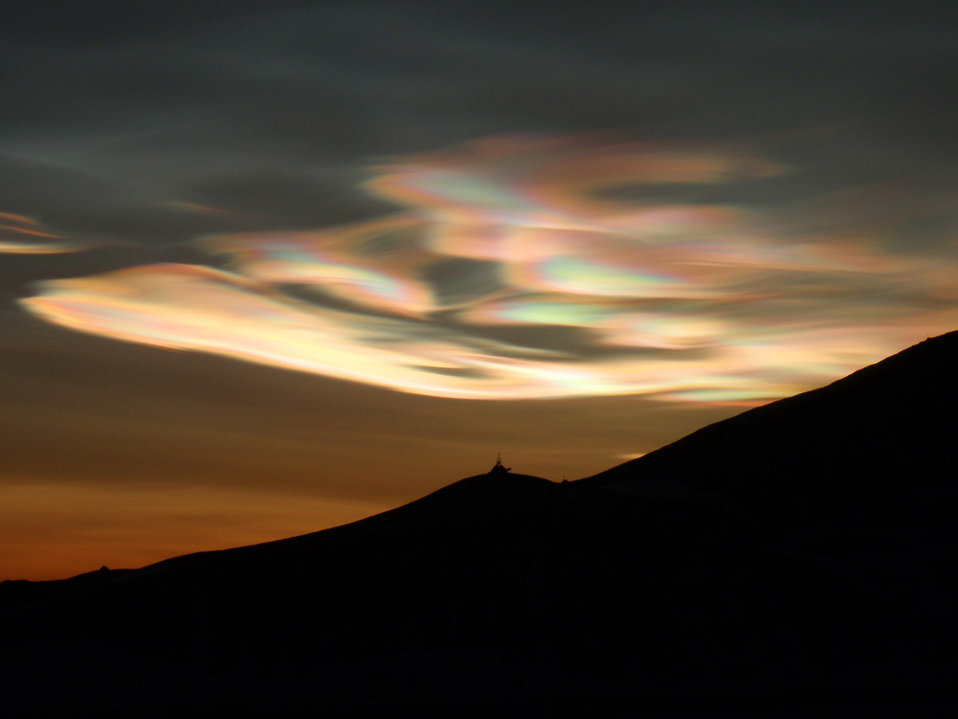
Nacreous clouds, which only appear in high latitudes at the end of winter, at mcmurdo station, antarctica.